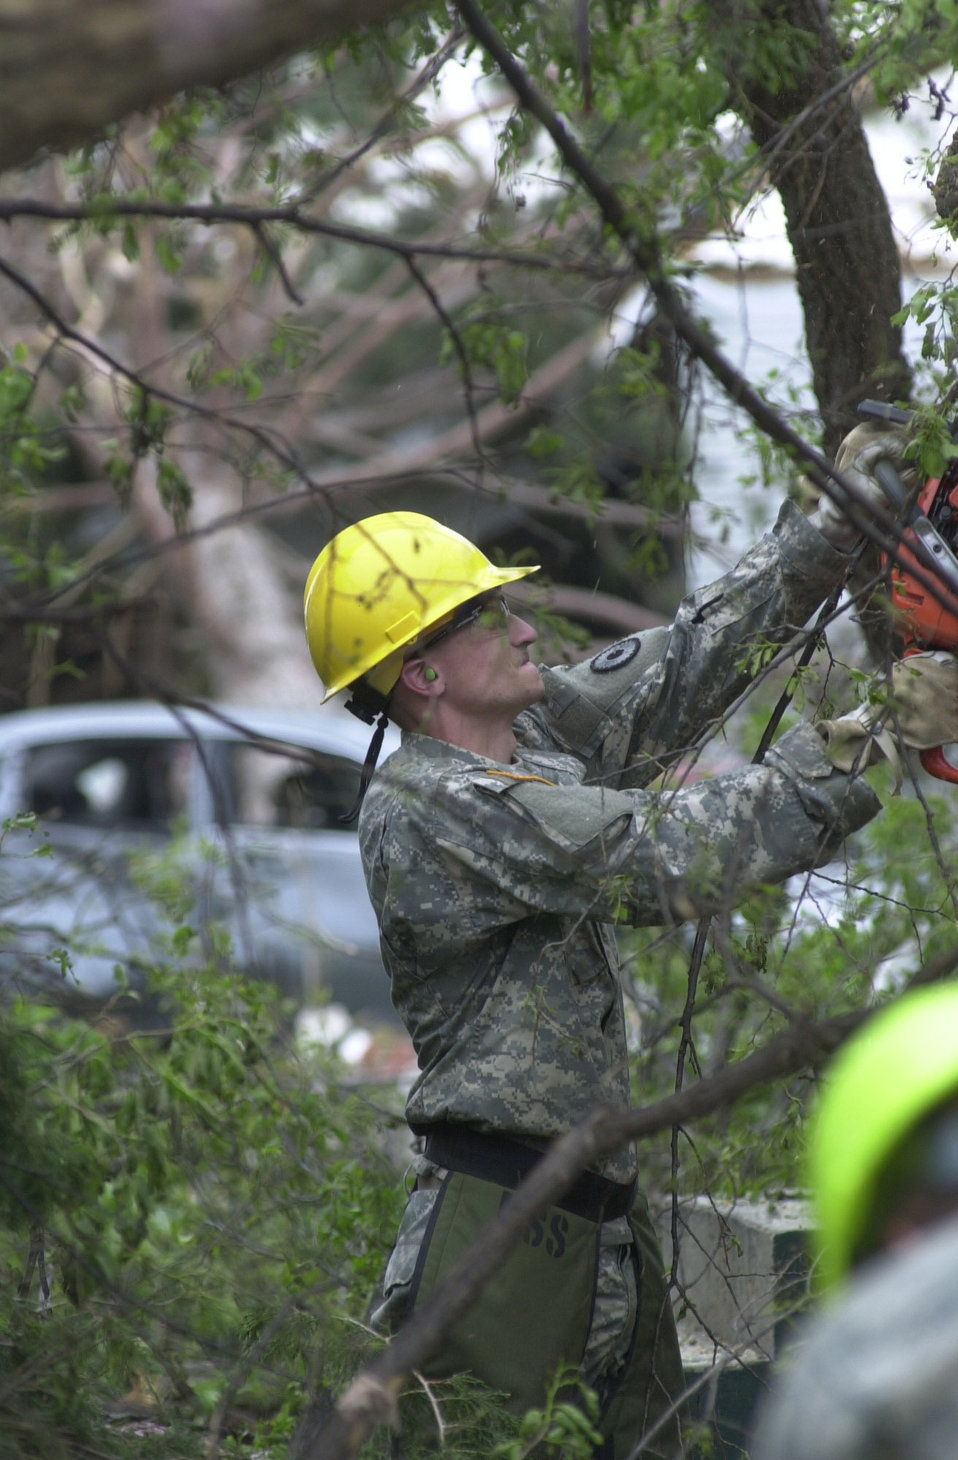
National Guard cleaning up devastated Kansas town

U.S. Army Spc. Robbie Gould chainsaws a downed tree May 8 near the courthouse of Greensburg, Kan., after an F5 tornado struck the town May 4. Specialist Gould is assigned to the 226th Engineering Company of the Kansas Army National Guard. Around 500 Army and Air National Guardmembers are in Greensburg removing debris, providing security, generating power, preparing food and performing other disaster relief functions.